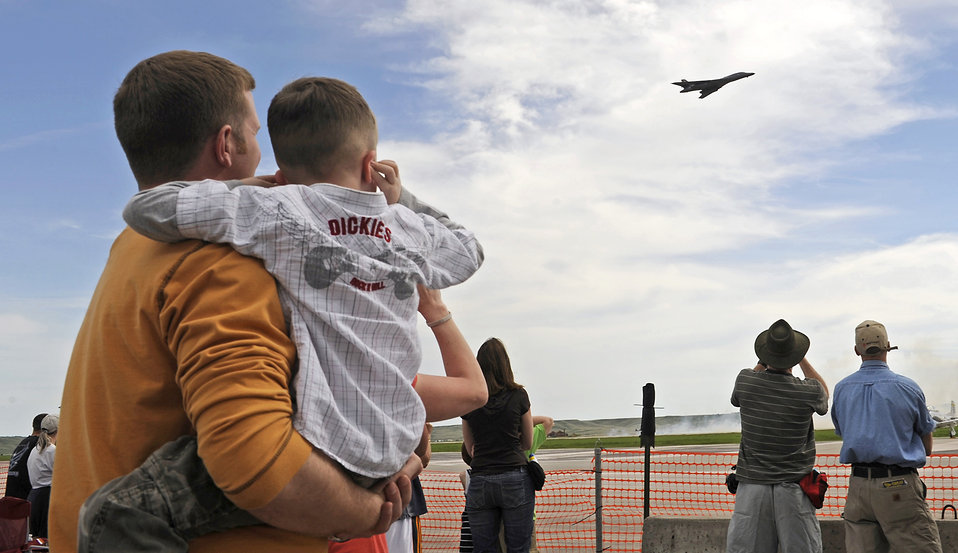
Admiring the view

Visitors watch as a B-1B Lancer flies June 4, 2011, above Ellsworth Air Force Base, S.D., during the 2011 Dakota Thunder air show.